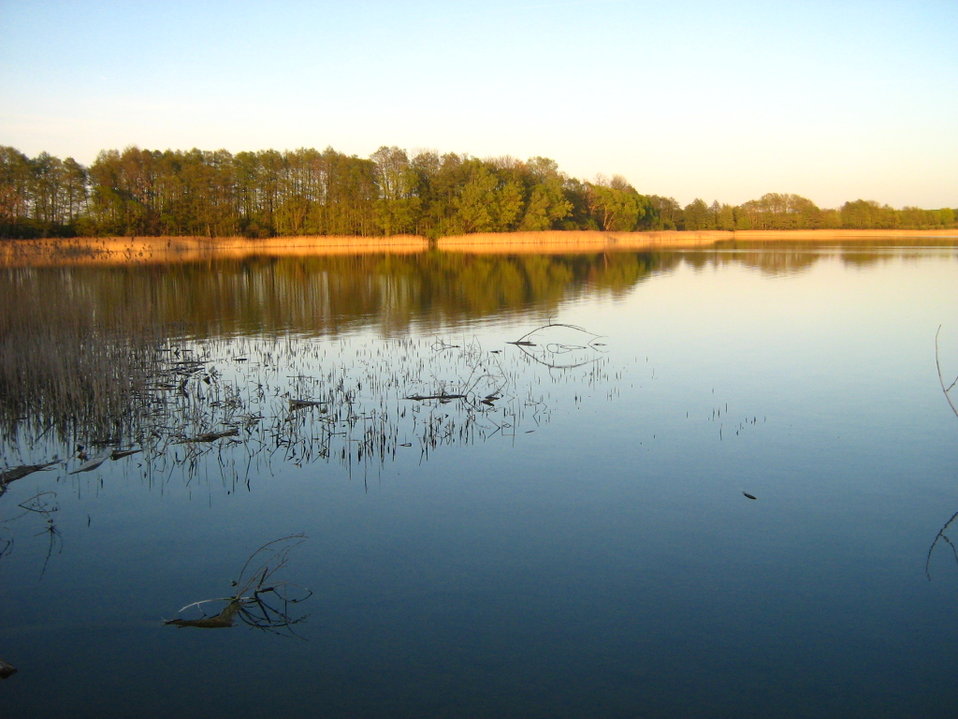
Deutsch: Der Cambser See bei Cambs im Landkreis Parchim (Mecklenburg).